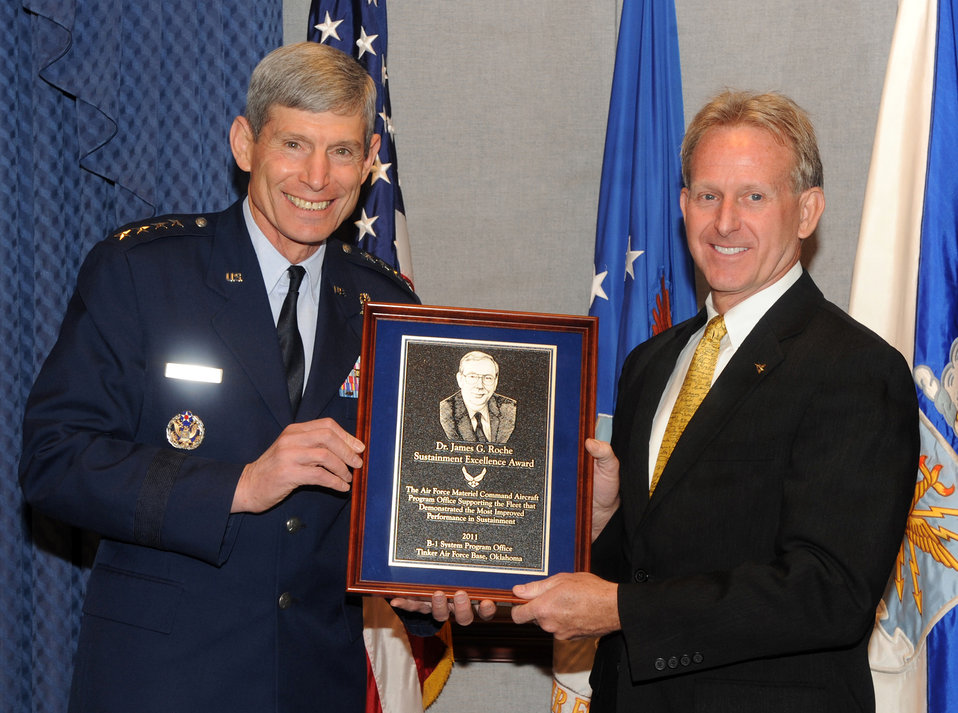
Dr James G. Roche Sustainment Excellence award

William Barnes, from Tinker Air Force Base, Okla., receives the Dr. James G. Roche Sustainment Excellence award from Air Force Chief of Staff Gen. Norton Schwartz during a Pentagon ceremony May 9, 2012. Barnes is the deputy chief, B-1 systems program office at Tinker.